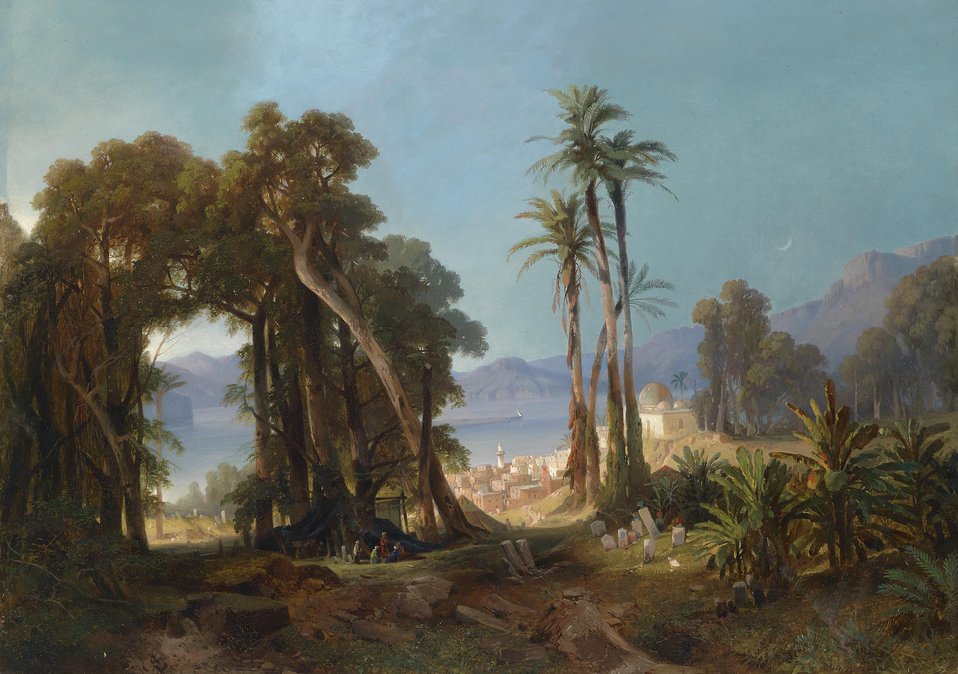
Deutsch: 'Türkischer Friedhof', laut rückseitigem Etikett, preußischer Kunstverein, signiert A. Geyer, Öl auf Leinwand, 70 x 96,5 cm